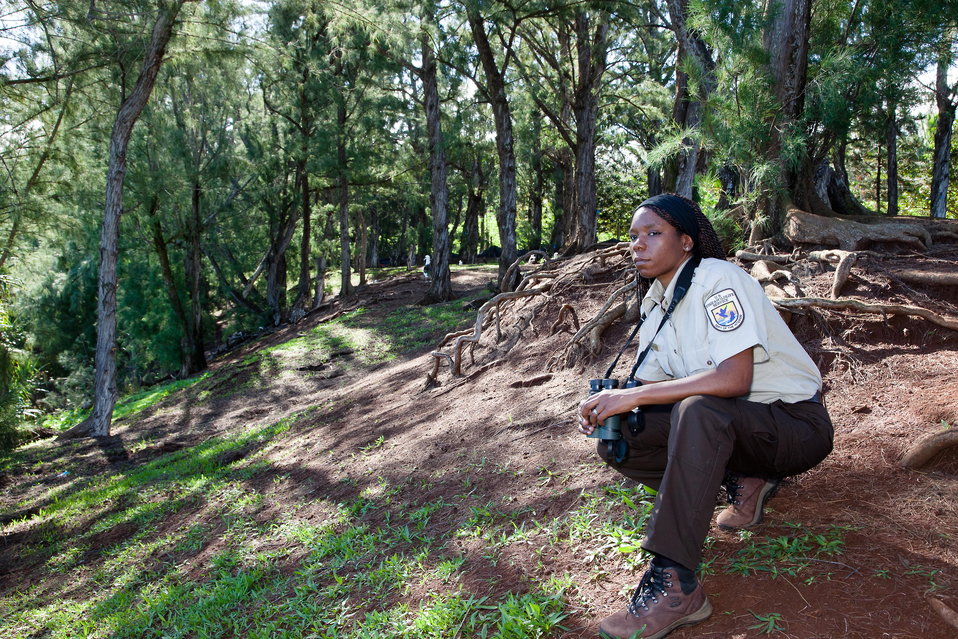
Shannon Smith at Kaua'i Complex

Shannon Smith, manager of Kaua'i National Wildlife Refuge Complex in Hawaii